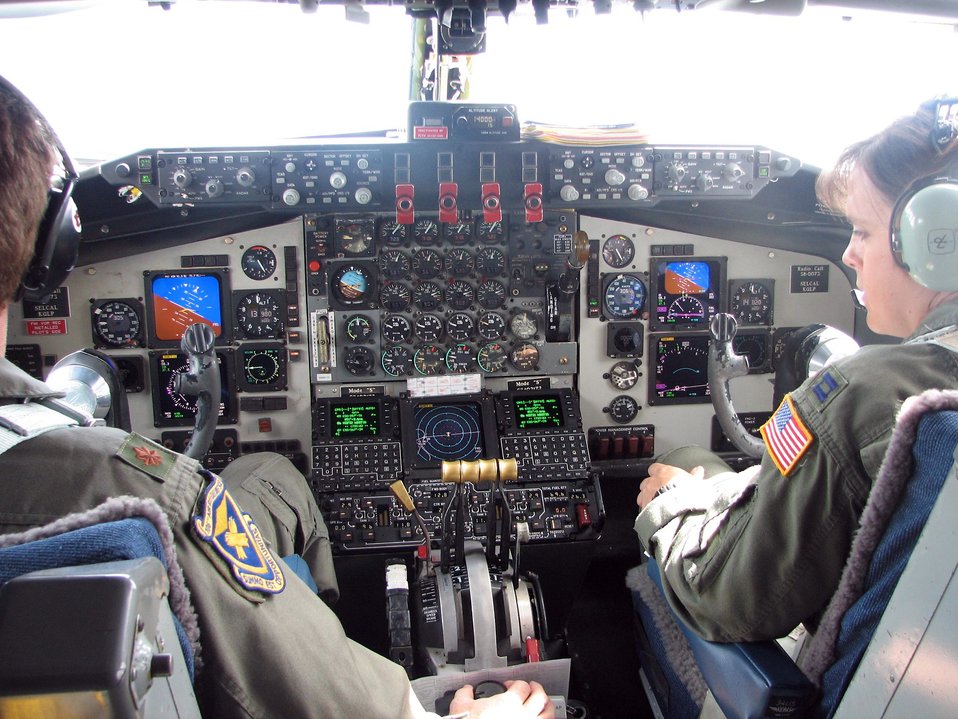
Military appreciation

AUBURN, Ala. - Maj. David Etheridge (left) and Capt. Allison Miller pilot their KC-135R Stratotanker here Sept. 24 prior to a fly-over at Auburn University's homecoming football game in support of military appreciation day and the Air Force anniversary. Major Etheridge and Captain Miller are both Auburn University Alumni and are assigned to the Alabama Air National Guard's 117th Air Refueling Wing in Birmingham, Ala.